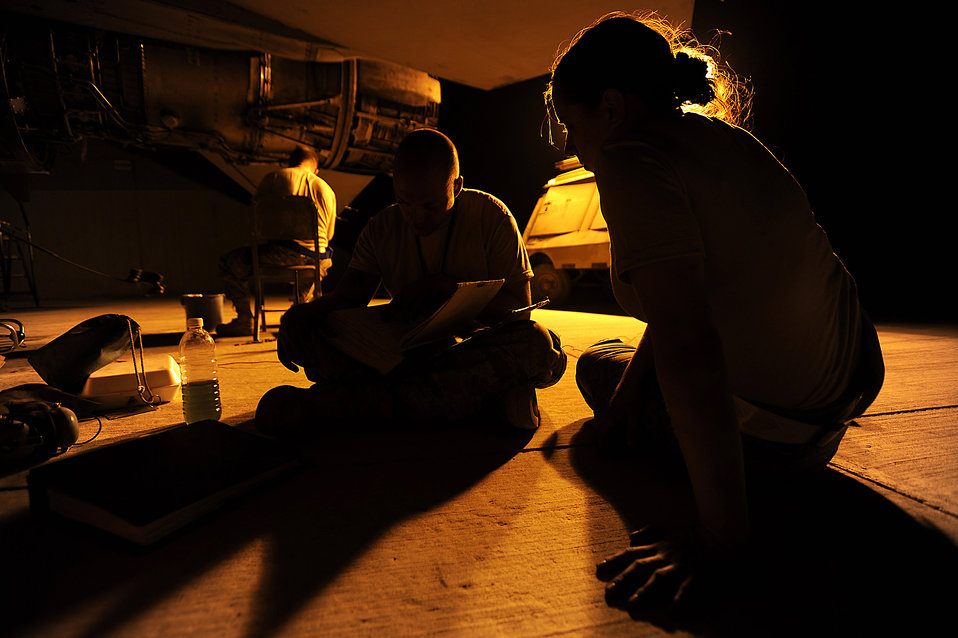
Burning midnight oil

Staff Sgt. Danny Shaw (left) installs safety wiring as Staff Sgt. Nathan Gadbois (middle) and Airman 1st Class Jessica Guinn consult a technical order while performing maintenance on an F-16 Fighting Falcon's propulsion system Oct. 6 during some late-night maintenance at Joint Base Balad, Iraq. Sergeants Gadbois and Shaw, both aerospace propulsion journeymen with the 332nd Expeditionary Aircraft Maintenance Squadron, are deployed from Misawa Air Base, Japan. Airman Guinn is an aerospace propulsion apprentice assigned to the 332nd EAMS also deployed from Misawa AB. Sergeant Gadbois' hometown is Bryan, Texas. Sergeant Shaw's hometown is Glasgow, Ky. Airman Guinn's hometown is Flint, Mich.